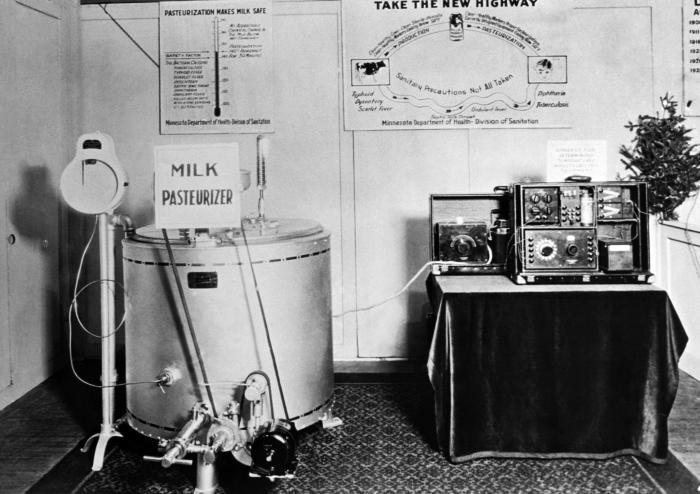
This historic photograph depicted a milk pasteurizer and thermocouple exhibit at the 1929 Minnesota State Fair. On the left side, back wall, note the public health message explaining how pasteurization makes milk safe.